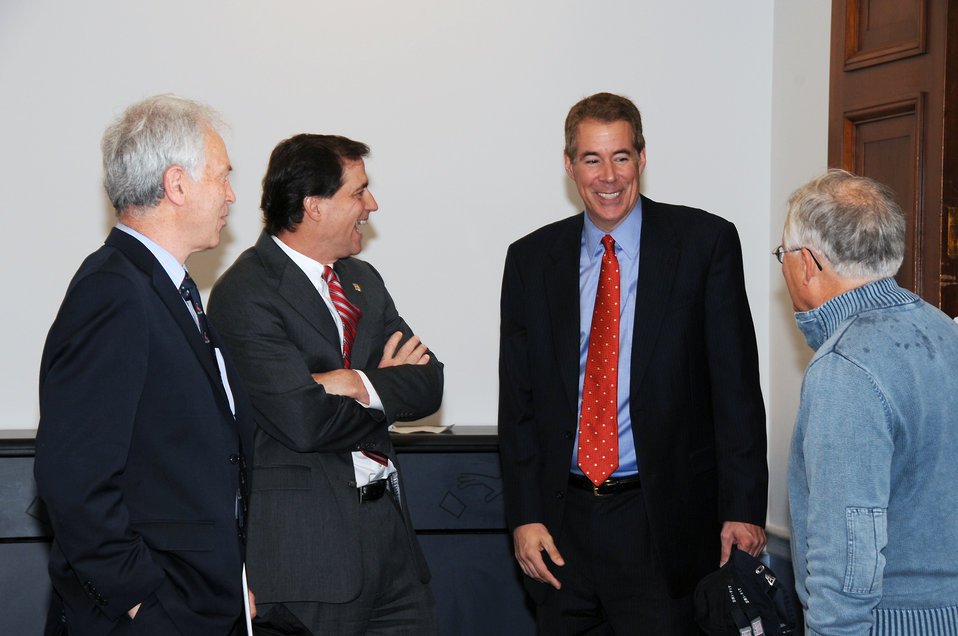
Save Vanishing Species on Capitol Hill

Herb Raffeale, Dan Ashe, Dave LesStrang